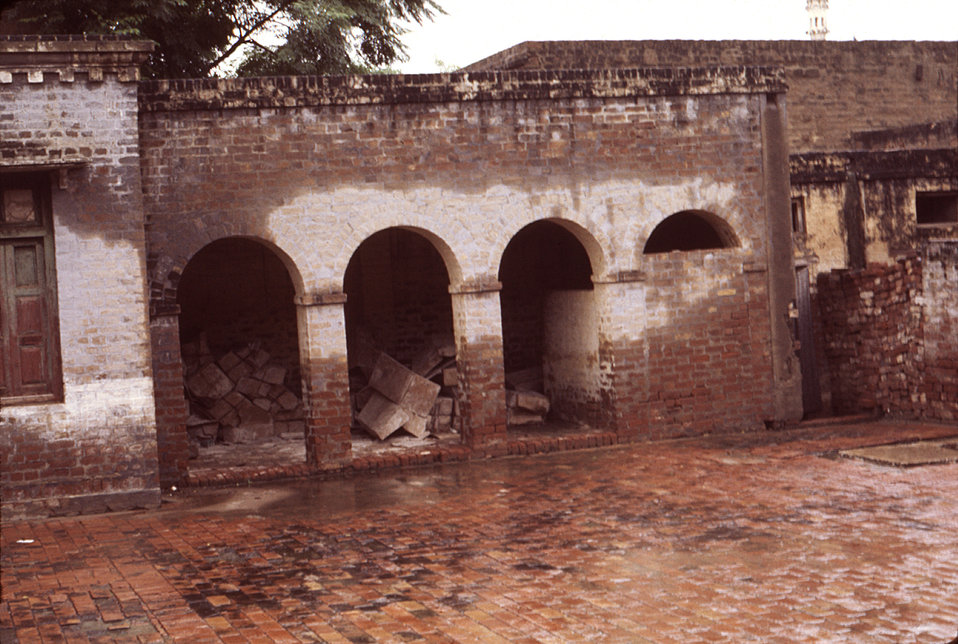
This site in Pakistan, 1976, illustrates the poor methods by which malathion was stored, open to the elements.